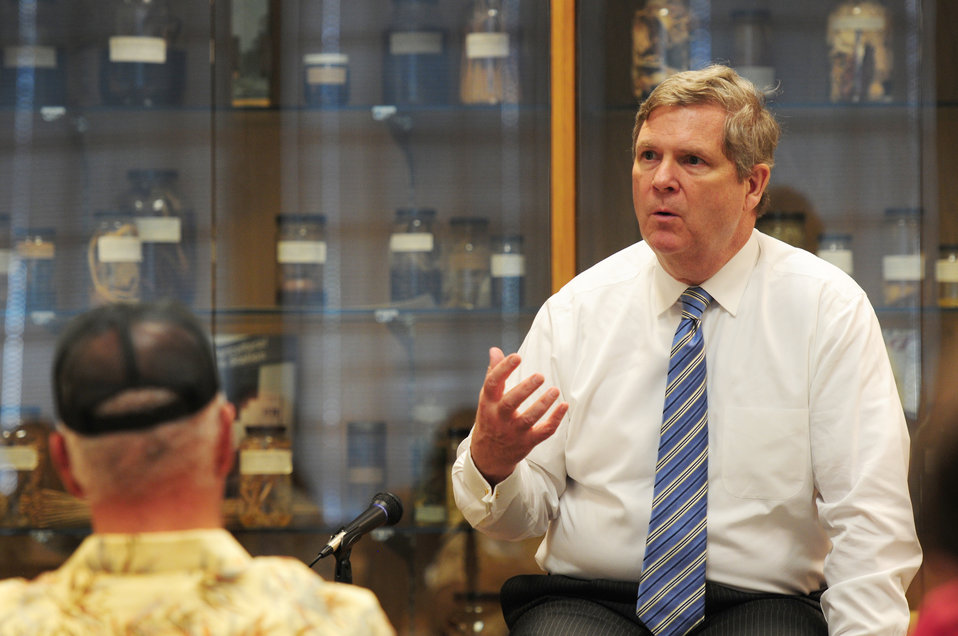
Agriculture Secretary Tom Vilsack speaks at a stakeholder meeting held at the State of Hawaii, Department of Agriculture Plant Quarantine Building in Honolulu, Hawaii, on Tuesday, January 10, 2012, to discuss USDA programs, agricultural challenges in Hawaii, and alternative energy.